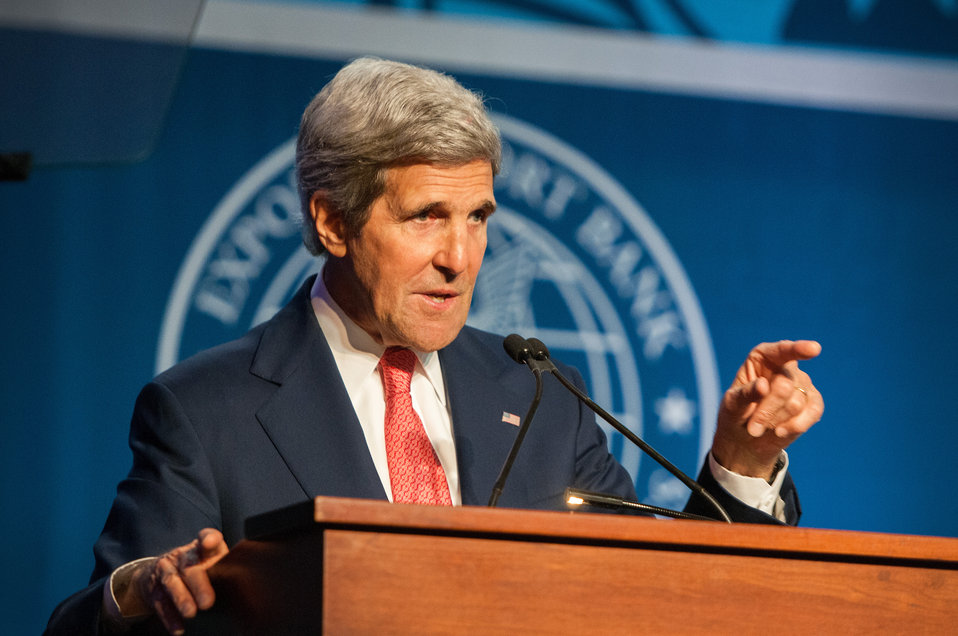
Secretary Kerry Delivers Remarks at the Export-Import Bank Annual Conference

U.S. Secretary of State John Kerry delivers remarks at the Export-Import Bank Annual Conference in Washington, D.C., on April 24, 2014.